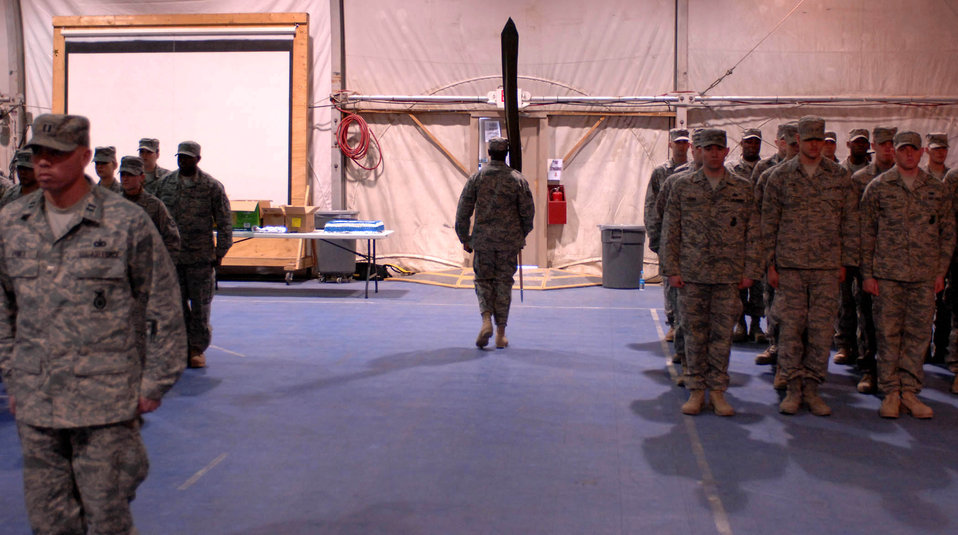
Bagram security forces Airmen pass torch as unit inactivates

The 755th Expeditionary Security Forces Squadron guidon is carried off Jan. 11 at Bagram Air Base, Afghanistan. The squadron, originally formed in May 2006 in response to a Army request for support of its detainee operations mission, was inactivated during a formal ceremony Jan. 11 here.